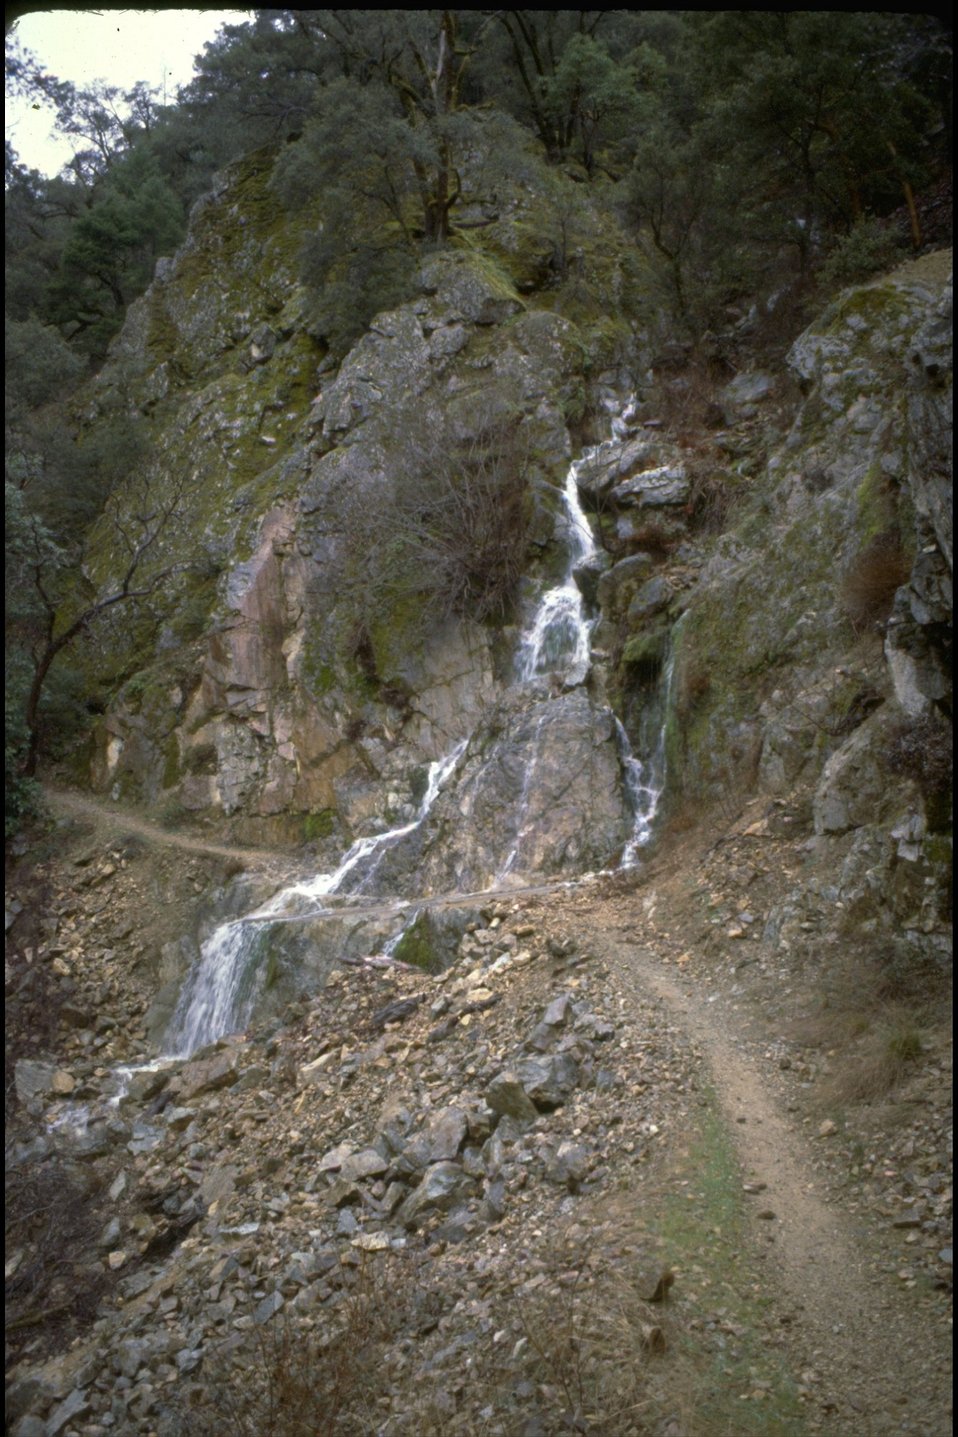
Rogue River - Trail on North side of river.